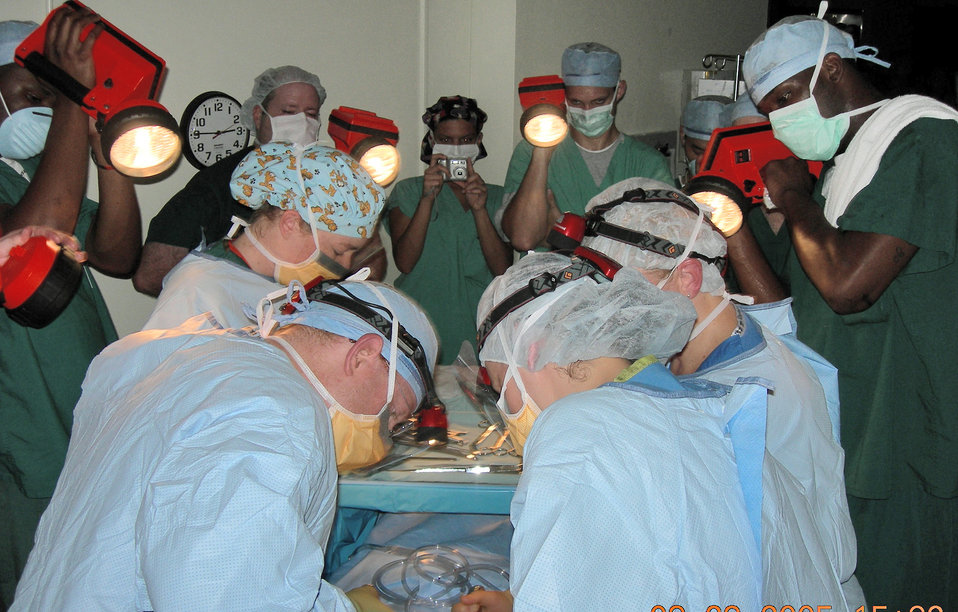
Baby arrives during hurricane via C-section by flashlight

KEESLER AIR FORCE BASE, Miss. -- Industrial flashlights were used to illuminate the surgical field for a baby's delivery by C-section just after the peak of Hurricane Katrina had passed.